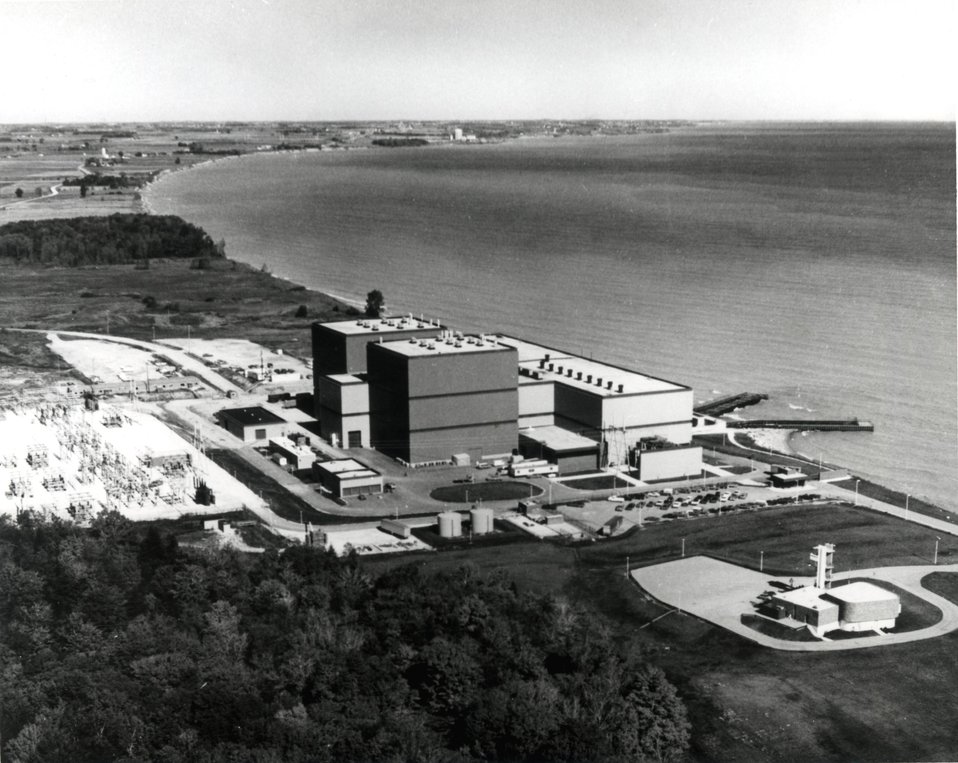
Point Beach Nuclear Plant Units 1 & 2 is operated by Wisconsin Electric Power Company and Wisconsin Power Company. Circa 1974.